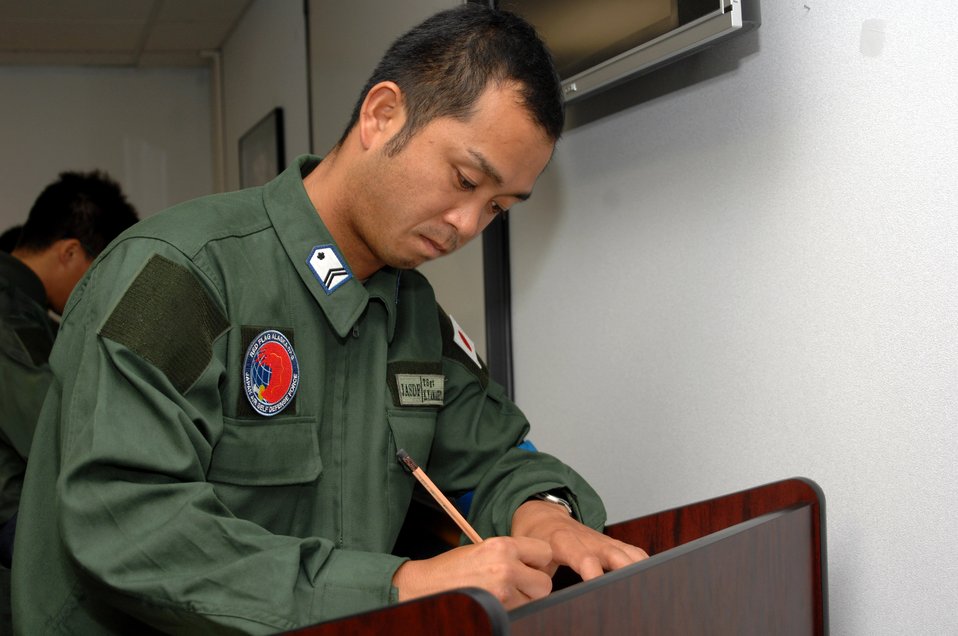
Japanese absentee voting at Red Flag-Alaska

The members of the Japan Air Self-Defense Force's 7th Air Wing, at Eielson Air Force Base, Alaska, to participate in Red Flag-Alaska 07-3, were able to vote in their country's official elections July 23rd at an absentee voting area set up on the base.